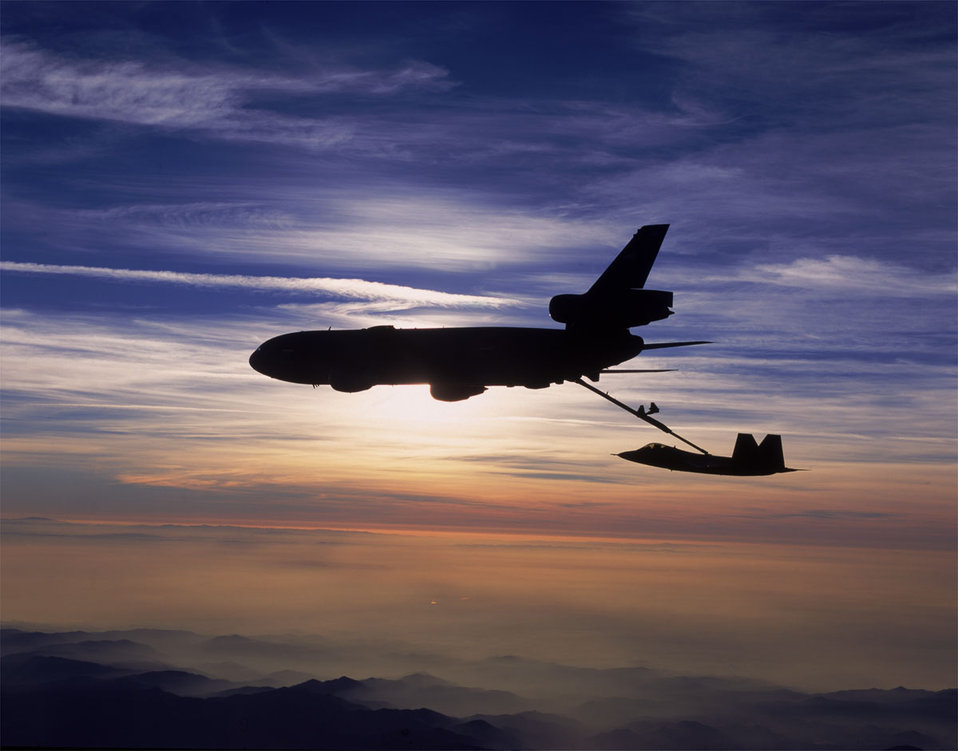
Thirsty Raptor

FILE PHOTO -- A KC-10 Extender from Travis Air Force Base, Calif., refuels an F/A-22 Raptor. The Raptor is the replacement for the F-15 Eagle. It is the most advanced fighter aircraft in the world, combining a revolutionary leap in technology and capability with reduced support requirements and maintenance costs. The F/A-22's integrated avionics gives it first-look, first-shot, first-kill capability that guarantees U.S. air dominance for decades.